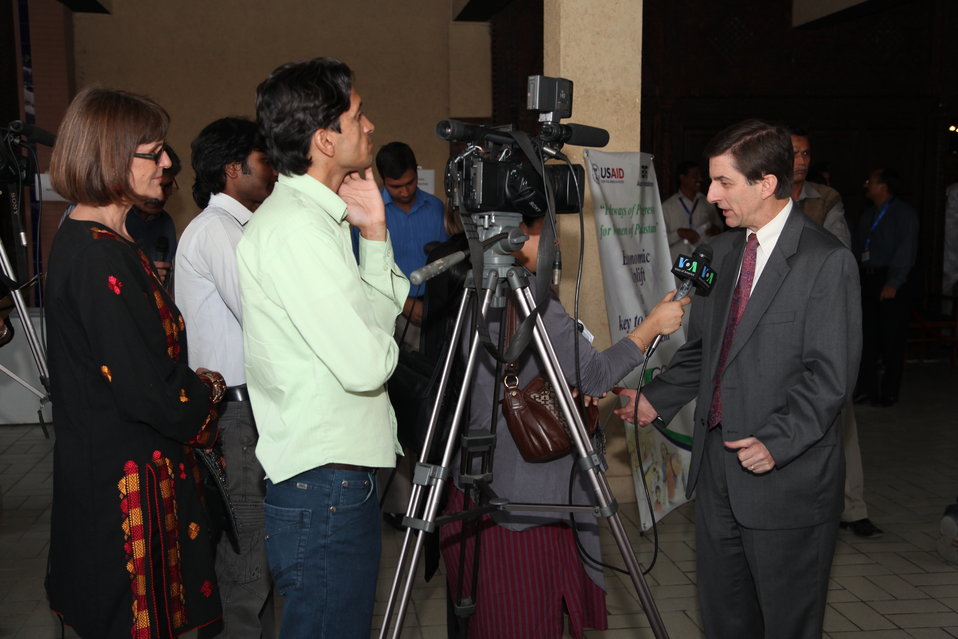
Mr. Andrew Sisson Aurat Yakjehti Mela November 25, 2011 Islamabad

GENDER EQUITY PROGRAM